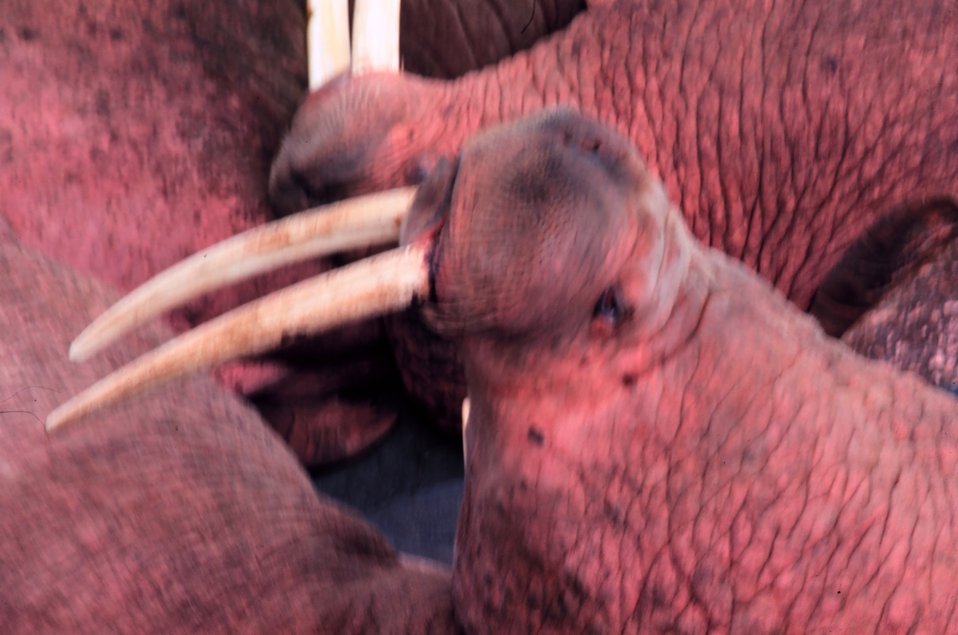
Walrus - Odobenus rosmarus divergens - on Bering Sea island.